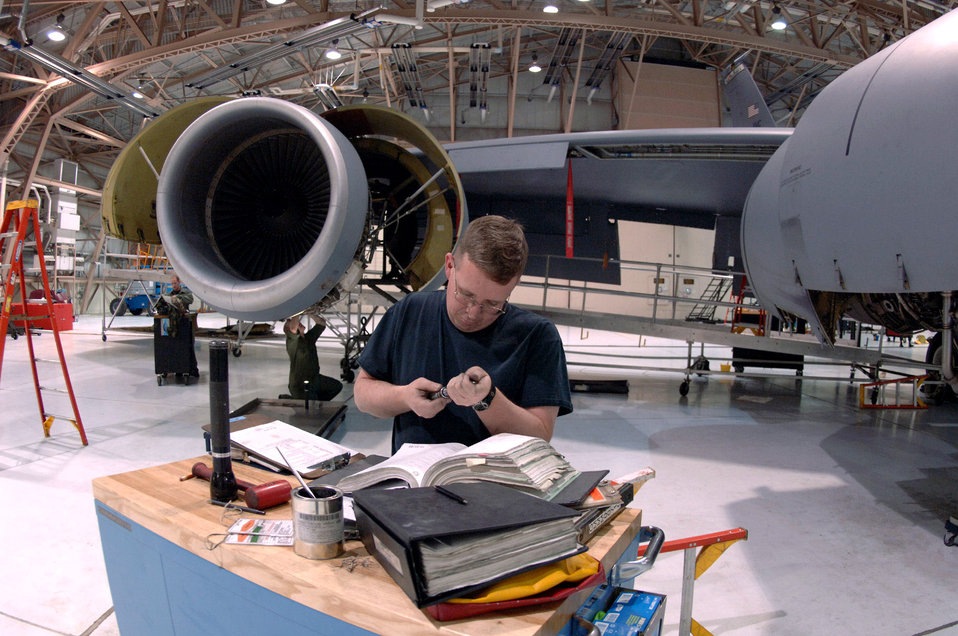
More than routine maintenance

Staff Sgt. Brian O'Day cross-references a part with reference material during a periodic inspection at Grand Forks Air Force Base, N.D. Every KC-135 Stratotanker goes through periodic inspections every 15 months or 1,500 flight hours. Sergeant O'Day and more than 50 other Airmen assigned to the 319th Maintenance Squadron inspect and repair nearly every system within five to eight days.